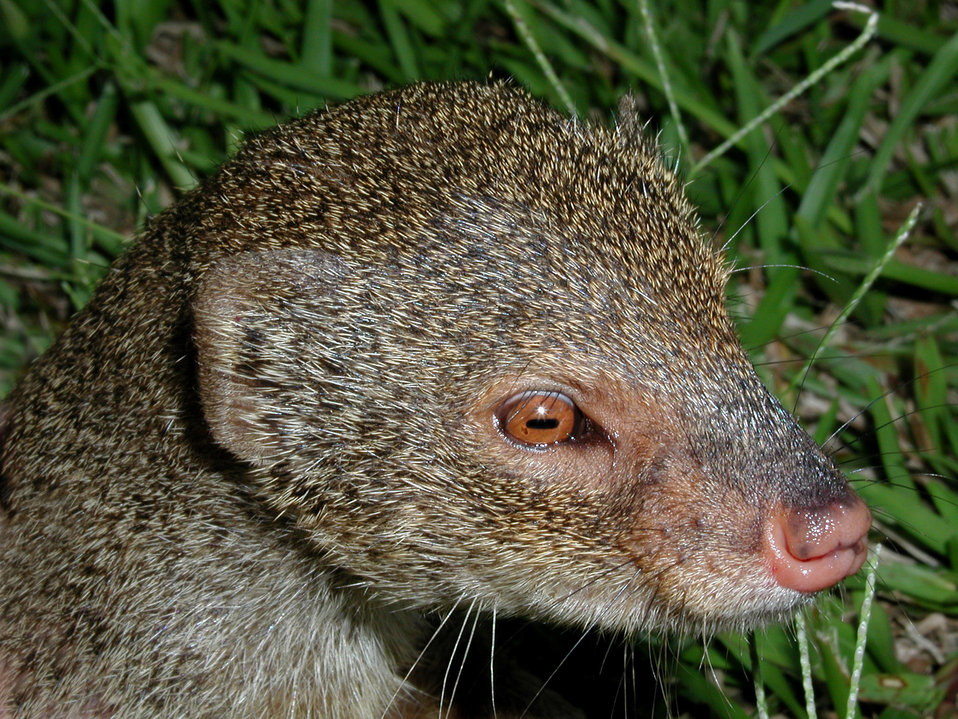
Each year, invasive Indian mongooses cause an estimated $50 million in damages to the Hawaiian Islands and Puerto Rico by spreading disease and eating native animals and plants. The U.S. Department of Agriculture's (USDA) Animal Plant Health and Inspection Service (APHIS) Wildlife Services (WS) researchers are developing methods to vaccinate mongooses against rabies, as well as methods to trap or lethally remove them from areas where they impact native wildlife.